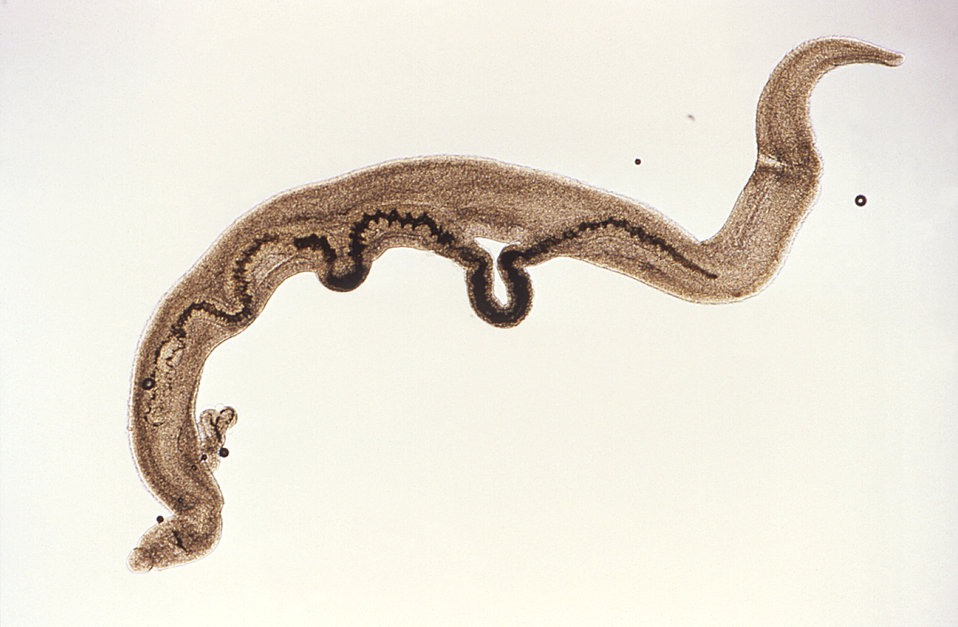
This magnified view reveals a pair of mating Schistosoma mansoni trematodes. Note that the thinner female is cradled inside the thicker male worm's gynecophoral canal.